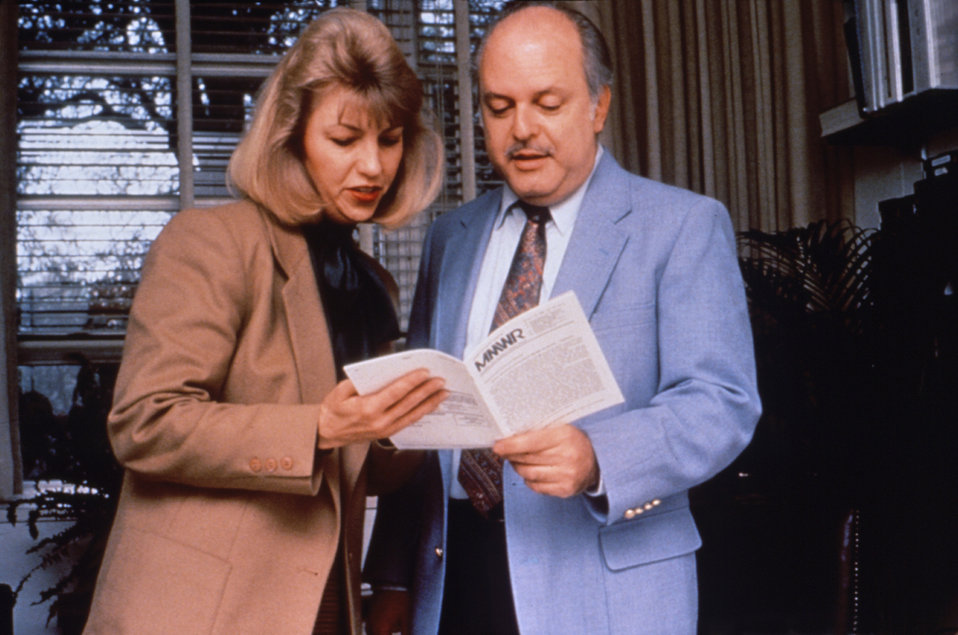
These health practitioners are reading CDC's publication entitled MMWR, or Morbidity and Mortality Weekly Report.